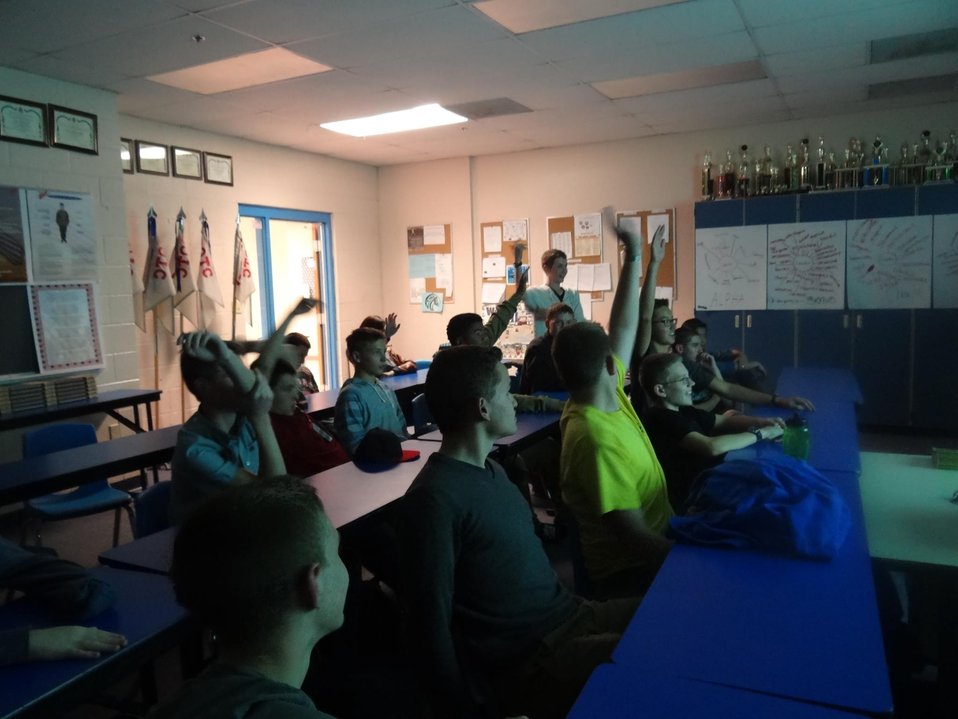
Buena High School JROTC in Arizona shattered the myths on National Drug Facts Chat Day. They used the booklet 'Shatter the Myths' to talk about the acts about drugs and participated in the Chat Day on January 28, 2014.